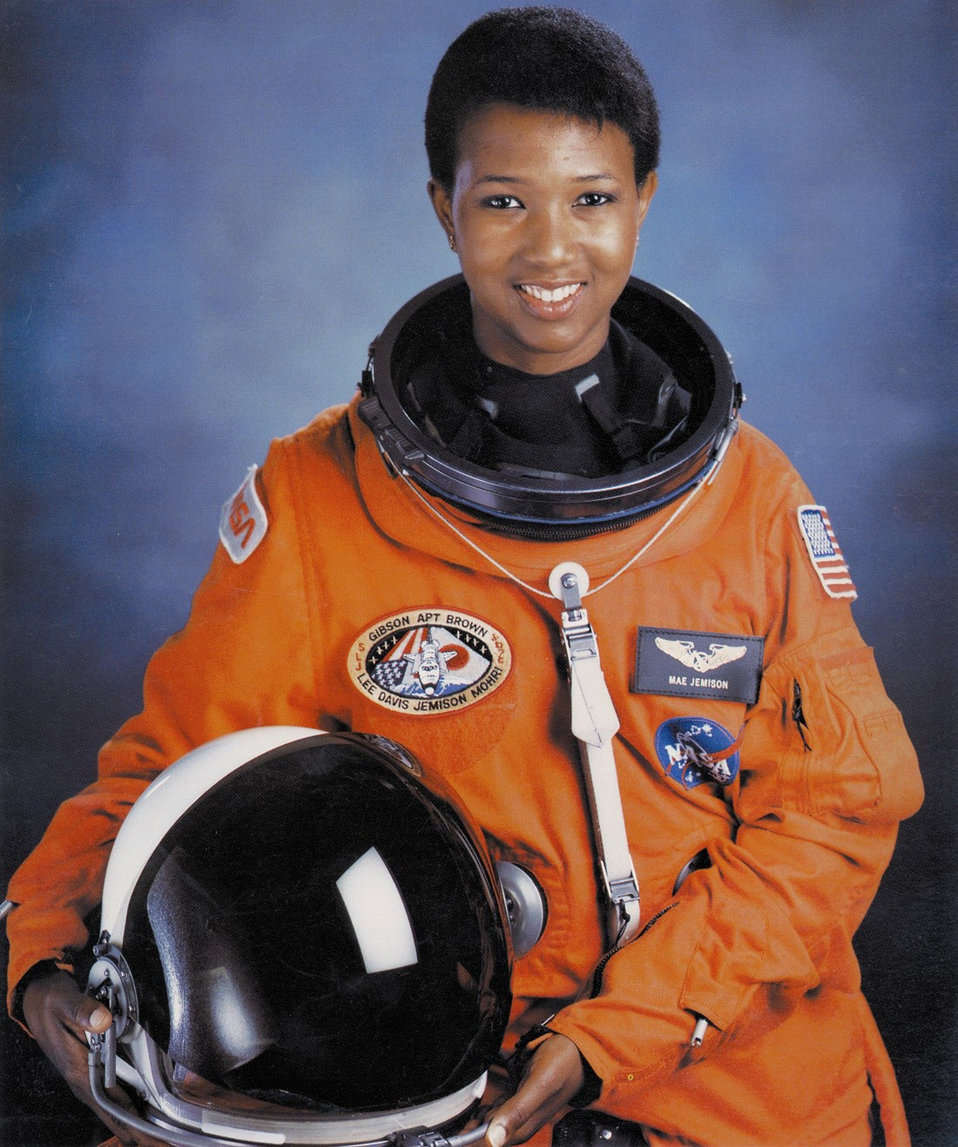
Dr. Mae Jemison was the first African-American woman to travel into space